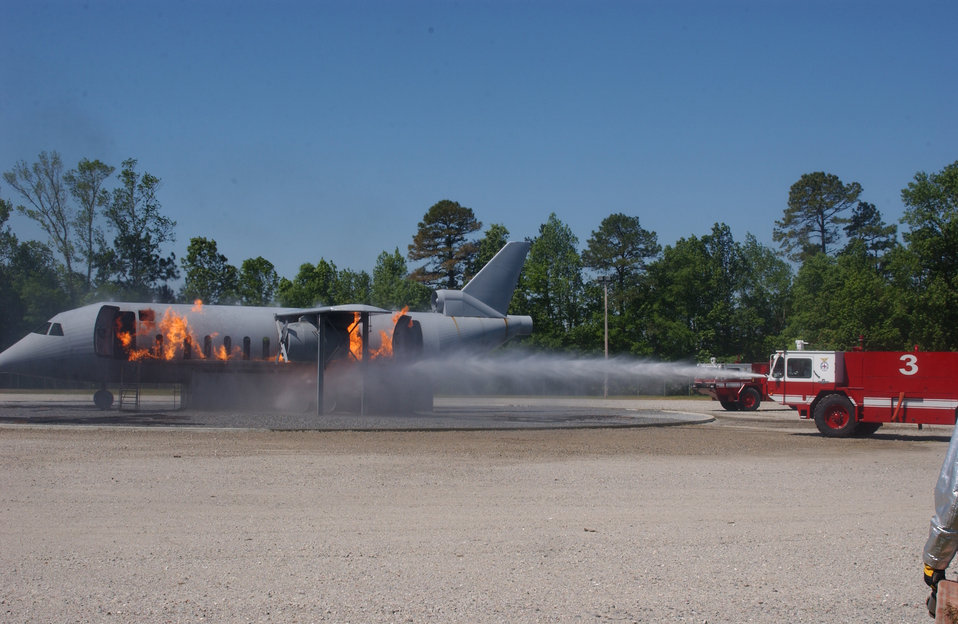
Flame out

SAVANNAH, Ga. -- Firefighters extinguish a C-130 Hercules fire during exercise Coronet White 05 here April 24. The firefighters are with the Maryland Air National Guard's 175th Fighter Wing.